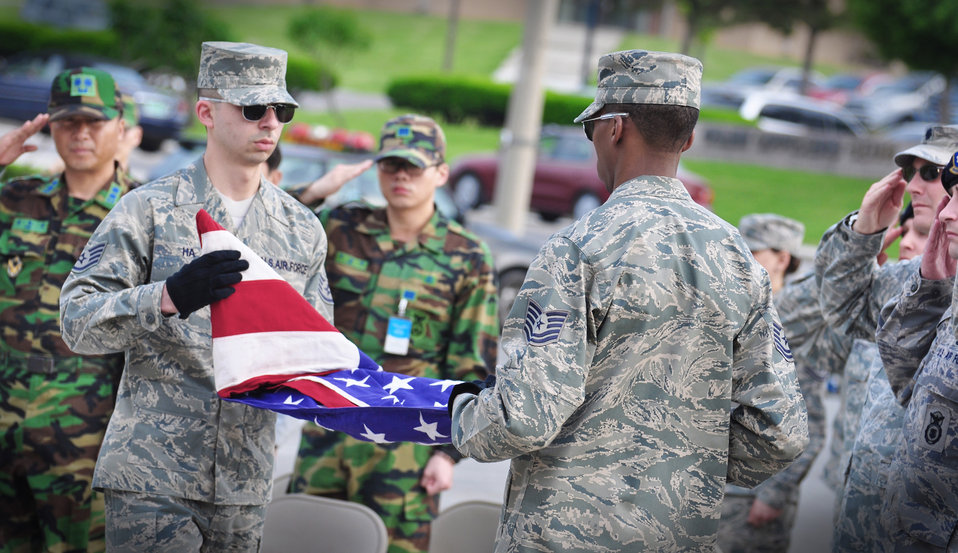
Law enforcement members honored during Police Week

Airmen celebrated National Police Week with a ceremonial retiring of two Airmen who were killed in the line of duty and other events at Osan Air Base, South Korea. In 1962, President John F. Kennedy signed a proclamation which designated May 15 as Peace Officers Memorial Day and the week in which that date falls as Police Week. Thousands of law enforcement agencies around the world celebrate the week to remember those who have been killed in the line of duty.